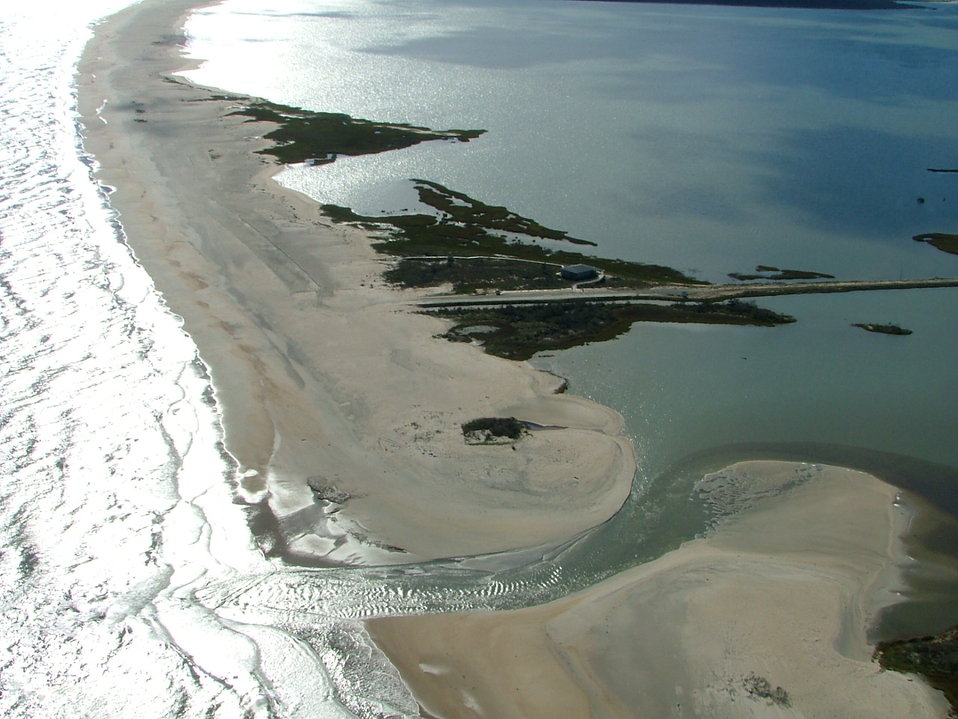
Chincoteague National Wildlife Refuge

An inlet between Swan Cove and the ocean was created during the storm.